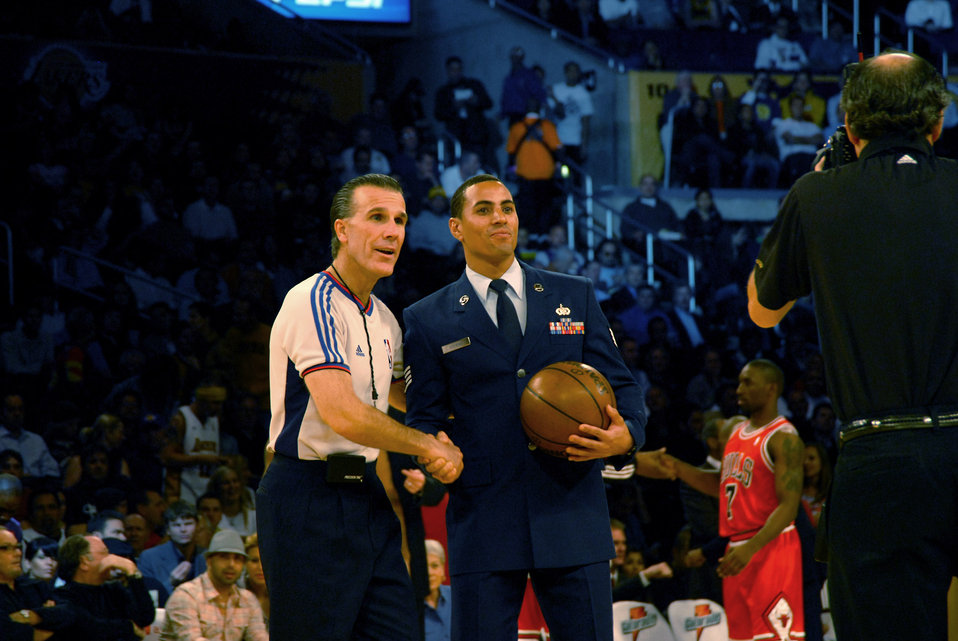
Air Force takes center stage as Bulls visit Lakers

Staff Sgt. Andre Stevens presents the game ball before a Chicago Bulls and Los Angeles Lakers basketball game Nov. 18 at the Staples Center in Los Angeles. Sergeant Stevens is a computer operator with the Space Superiority Systems Wing at Los Angeles Air Force Base, Calif.